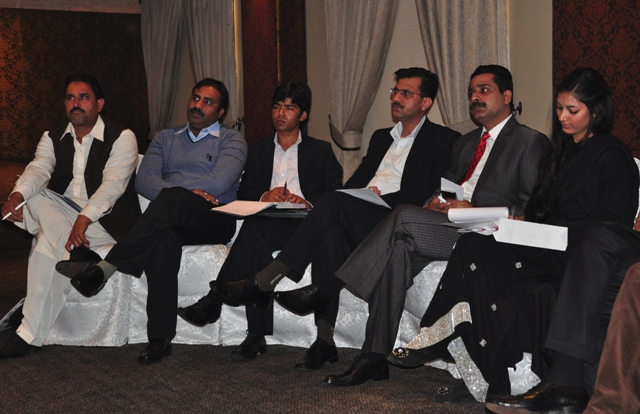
Workshop Participants engaged in group discussion.